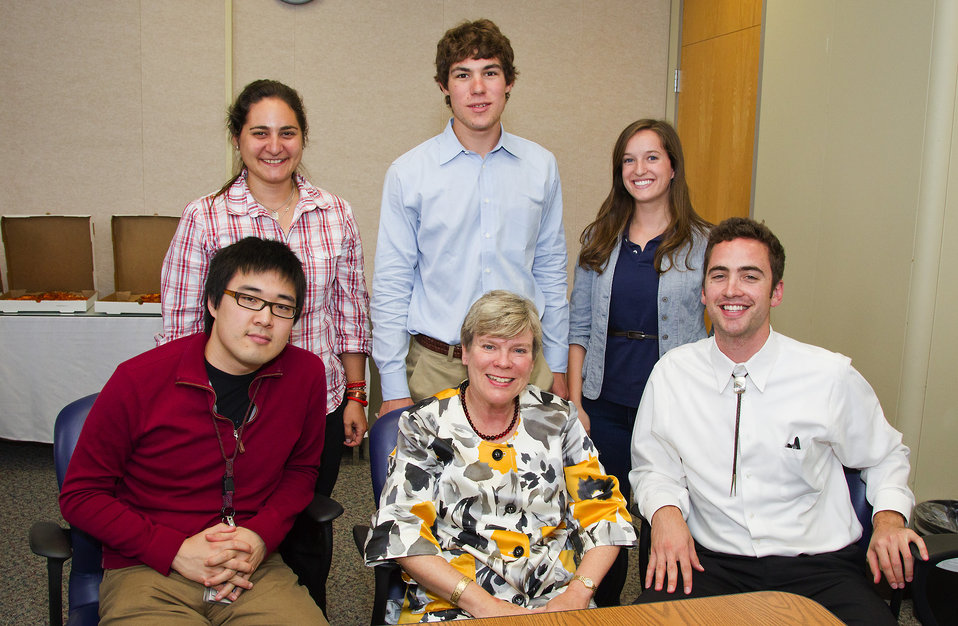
Assistant Secretary Gottemoeller Meets With Students at Los Alamos National Laboratory

Assistant Secretary of State for Arms Control, Verification and Compliance Rose Gottemoeller meets with students at Los Alamos National Laboratory in New Mexico on August 19, 2011. Seated to the left of Assistant Secretary Gottemoeller is Peter S. Hong, and to the right of her is Timothy W. Sussman. In the back row from left to right are: Zahra S. Kutchesfahani, Seth D. Katz, and Ariana N. Rowberry.